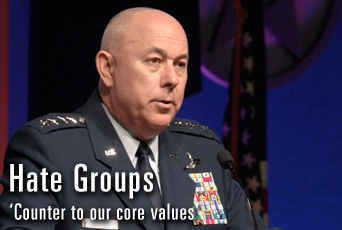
Hate groups, gangs not acceptable to Air Force

Participation in hate groups and gangs is not compatible with the Air Force way of life, said Air Force Chief of Staff Gen. T. Michael Moseley and Chief Master Sgt. Rodney J. McKinley.